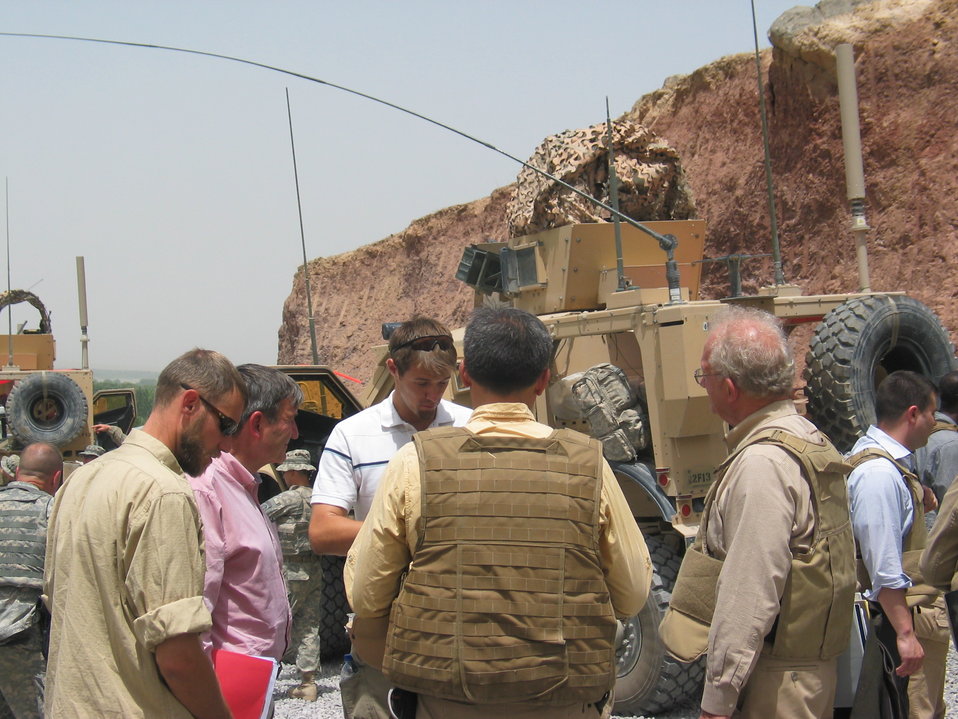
CODEL Berman